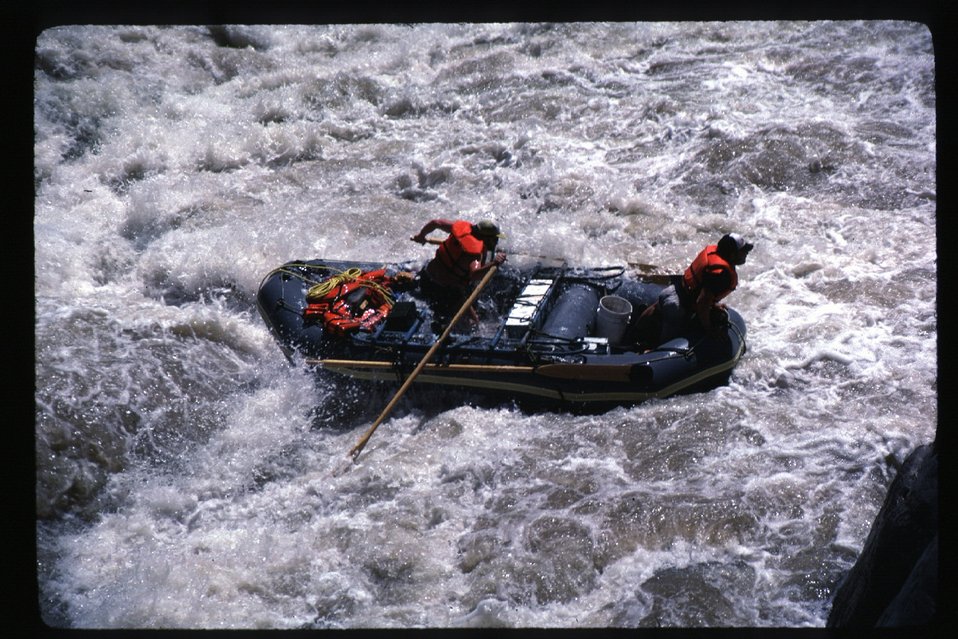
Recreation Rafting Punched a hole Owyhee River in Oregon